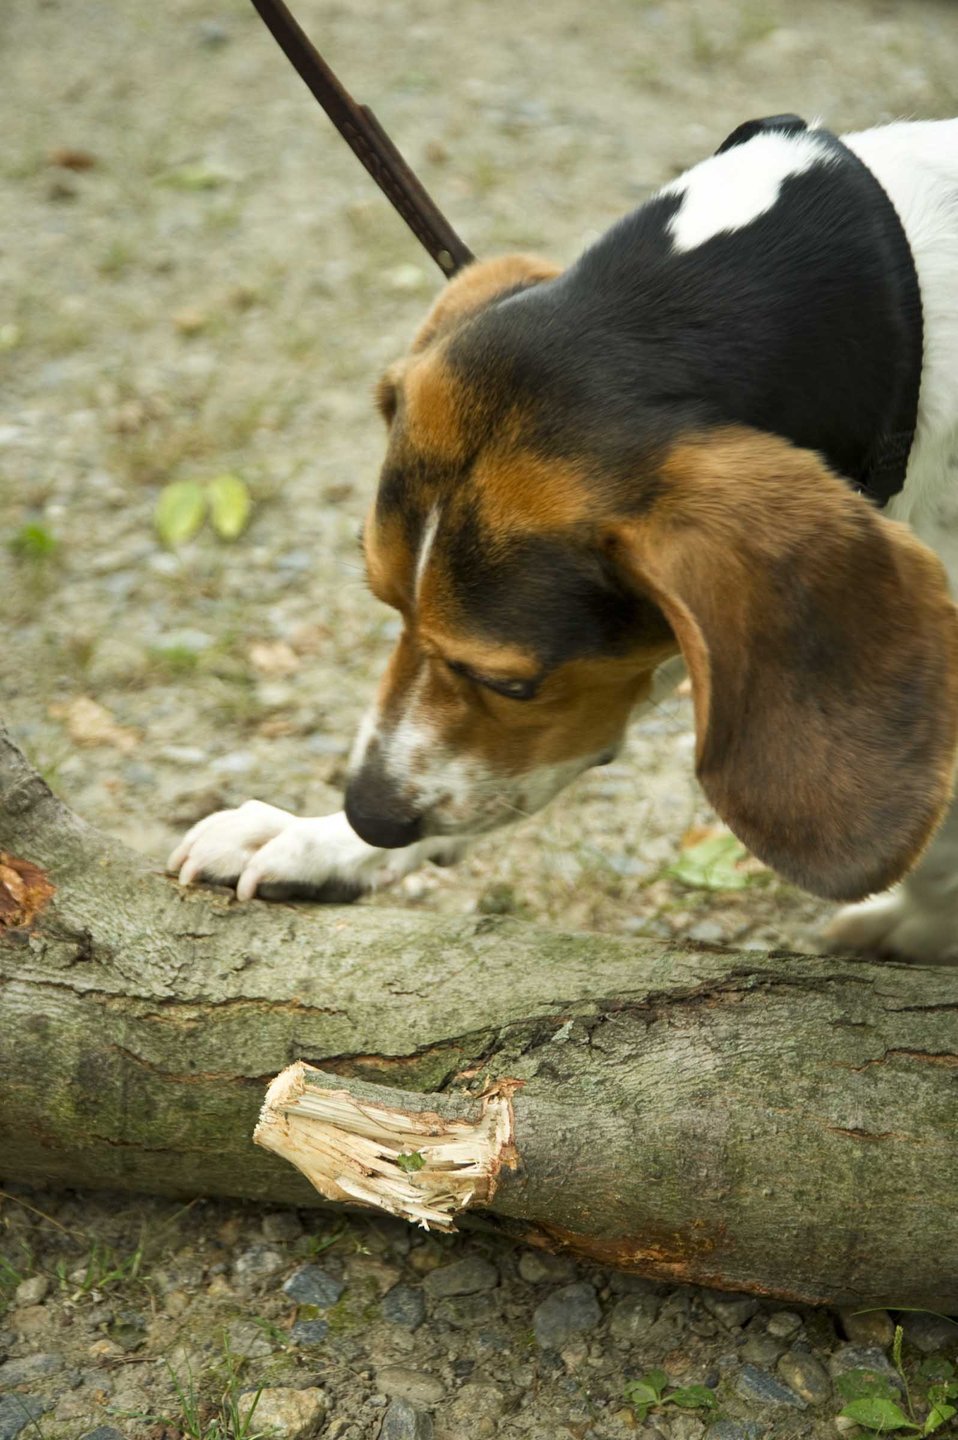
U.S. Department of Agriculture (USDA) Asian Longhorned Beetle (ALB) Detector Dogs are participating in a feasibility study to detect the presence of the invasive beetle in Worcester, MA on Aug. 1, 2012. The ALB is an invasive insect that is killing trees in Massachusetts, New York, New Jersey and Ohio. Four dogs are currently being trained to recognize beetle “frass” or excrement that the beetle leaves behind. This study is part of an important mission to protect neighborhood trees and this country’s valuable forest resources from this harmful pest.